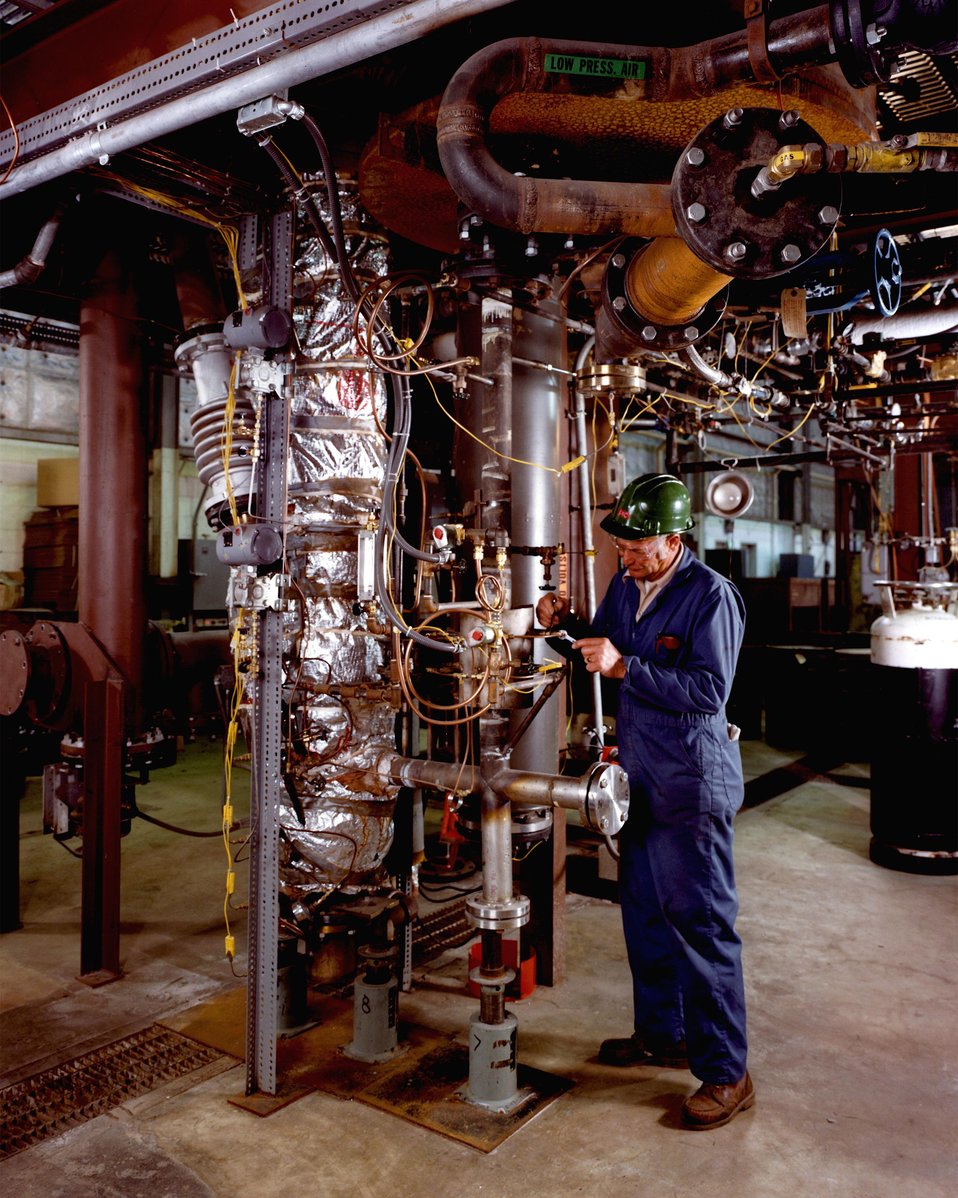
THE BASE OF THE GASIFIER HAS THE 'L' VALVE (R) WHICH TRANSPORTS SAND FROM THE COMBUSTOR TO THE GASIFIER.

THE MULTI-SOLID FLUIDIZED-BED GASIFICATION TECHNOLOGY IS A METHOD OF CONVERTING BIOMASS, E.G., WOOD CHIPS, INTO METHANE-RICH GAS THAT COULD BE USED IN PLACE OF NATURAL GAS.THE METHOD USES A CHEMICAL CATALYST IN A REACTOR SYSTEM TO GASIFY BIOMASS. THIS REACTOR IS LESS COMPLEX IN DESIGN THAN A COAL GASIFICATION PROCESS AND ALLOWS THE USE OF SMALLER UNITS.